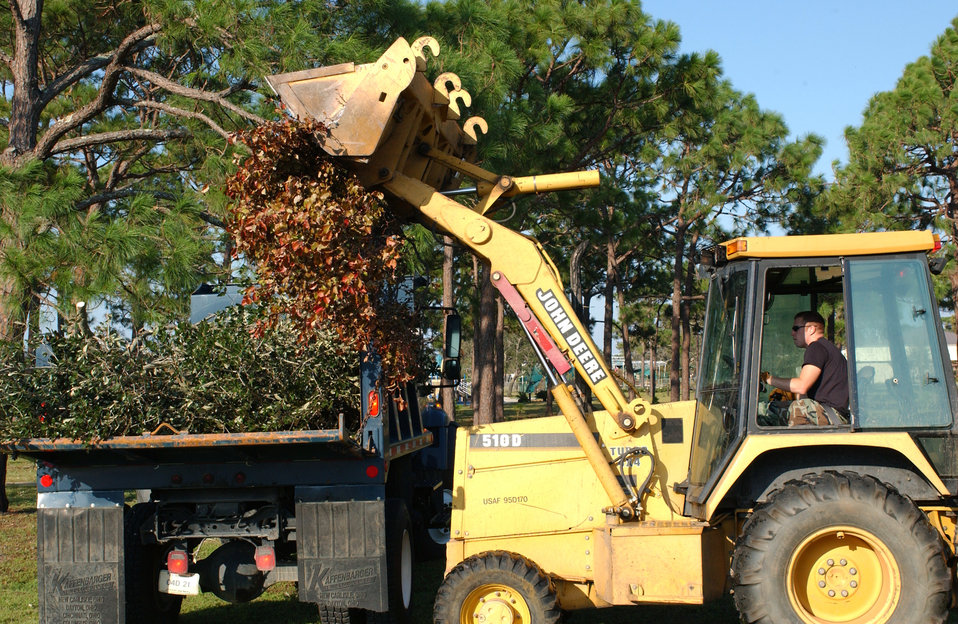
Hurlburt Field aircraft return, establishes report times

HURLBURT FIELD, Fla. -- A 16th Civil Engineer Squadron Airman cleans up debris Sept. 18 after Hurricane Ivan swept through the base two days earlier. No one was injured, and base officials are still restoring operations.